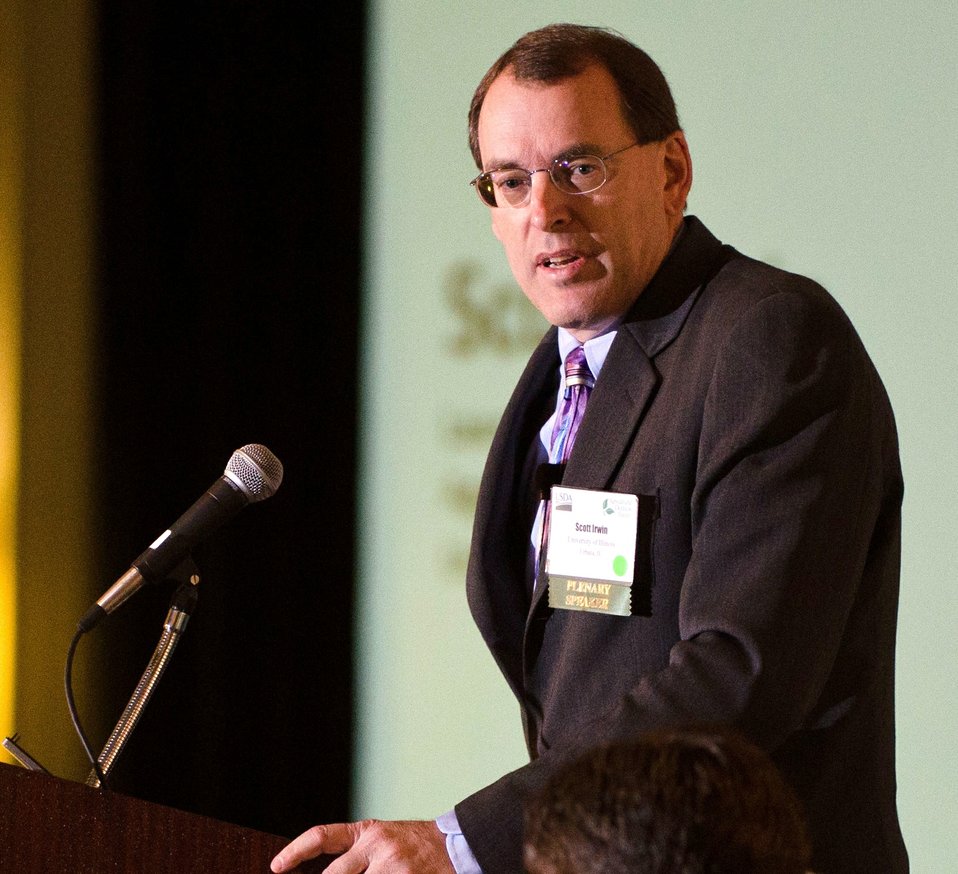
From the University of Illinois Agricultural Marketing department, Scott Irwin speaks during the plenery session at 2013 Agricultural Outlook Forum, held at the Crystal Gateway Marriott Hotel, Arlington, Virginia on Thursday, Feb. 21, 2013. This annual Forum brings together producers, policymakers, and business, government, and industry leaders to meet, exchange ideas, and discuss timely agriculture issues.